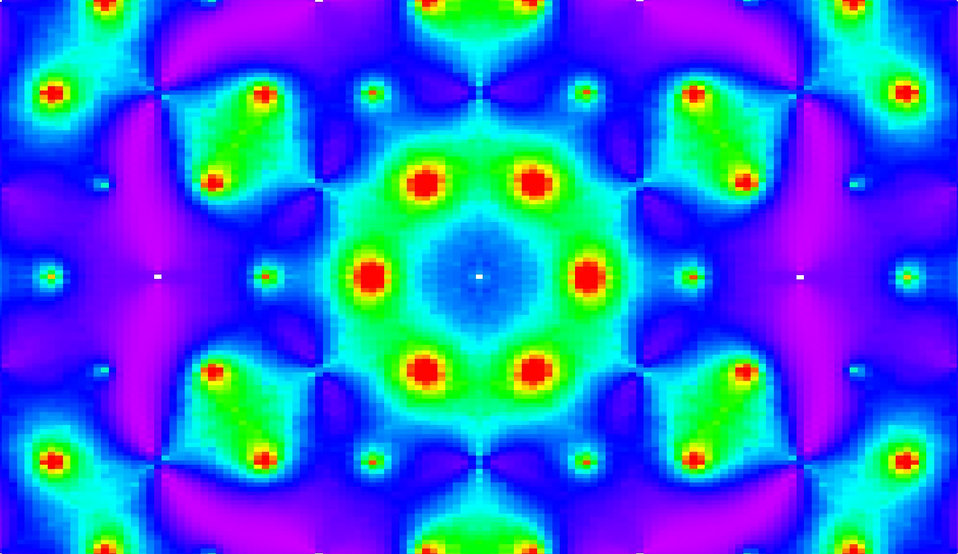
Magnetic monopoles are created when the spin of an ion in one corner of a spin ice crystal is knocked askew, creating a monopole (red sphere) and adjacent antimonopole (blue sphere).